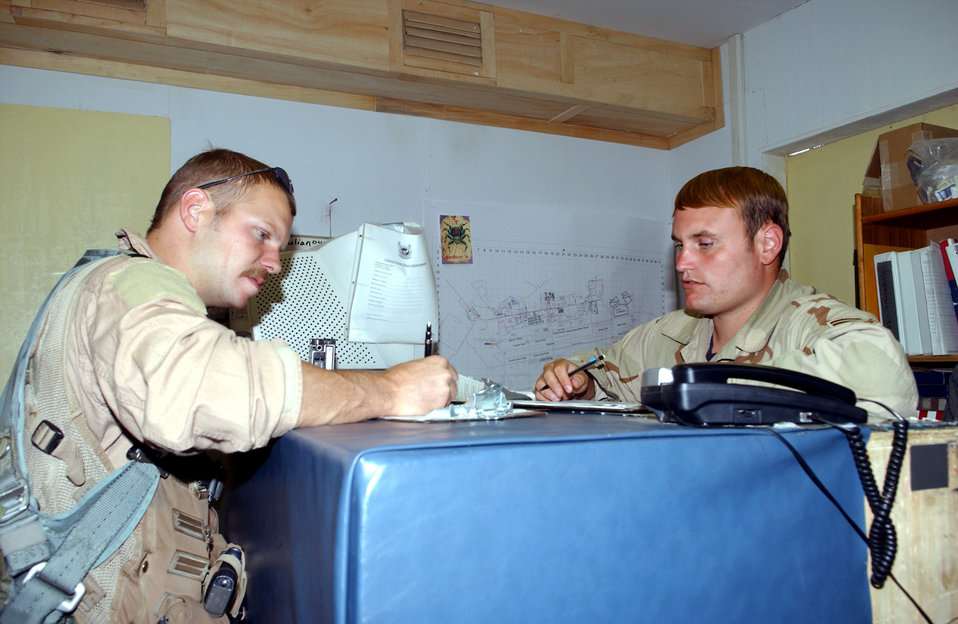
Ops center maintains smooth info flow

BAGRAM AIR BASE, Afghanistan -- Senior Airman Duffy Reid (right) completes a maintenance debriefing with Capt. Gage, whose last name is withheld for security reasons. The debriefing ensures aircraft are quickly readied for future missions. Airman Reid is assigned to the 354th Expeditionary Aircraft Maintenance Squadron here.